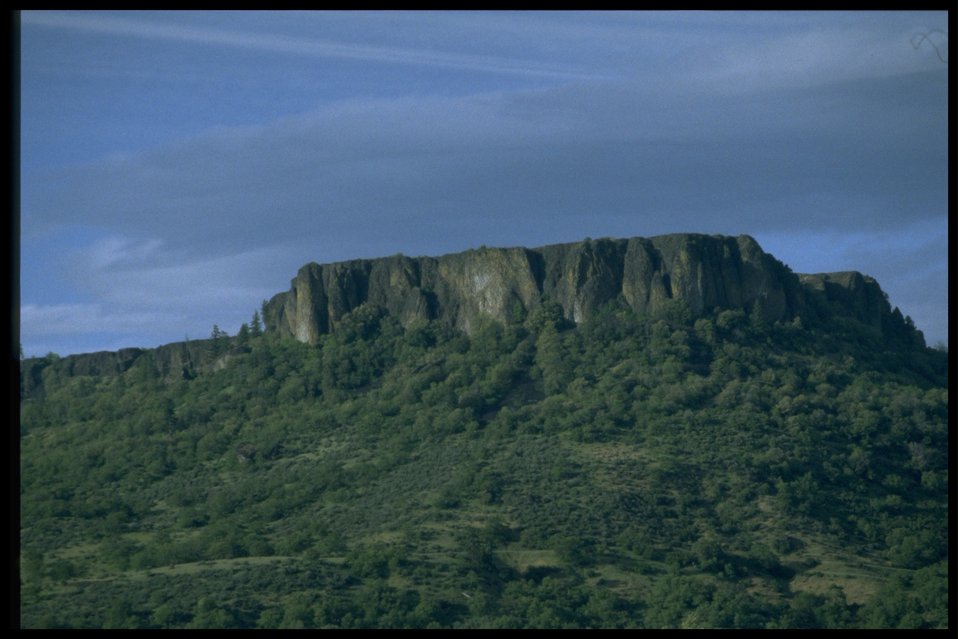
Scenic view of Lower Table Rock.